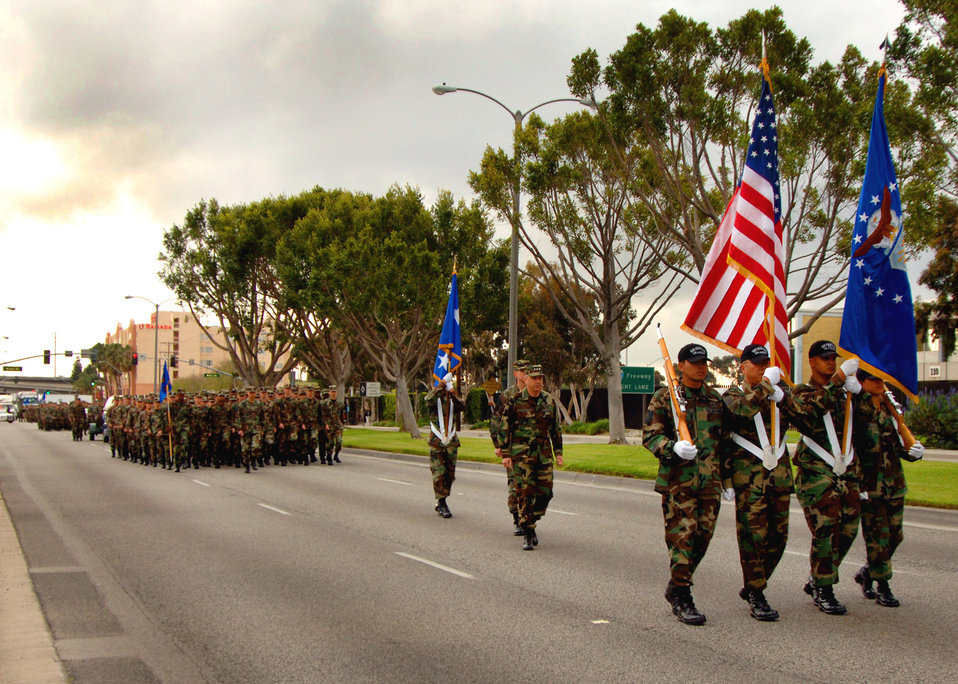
Los Angeles AFB dedicates new Schriever Space Complex

The Los Angeles Air Force Base Honor Guard leads Lt. Gen. Michael Hamel, Space and Missile Systems Center commander, and 300 base Airmen to the new Schriever Space Complex in El Segundo, Calif., on Monday, April 24, 2006.